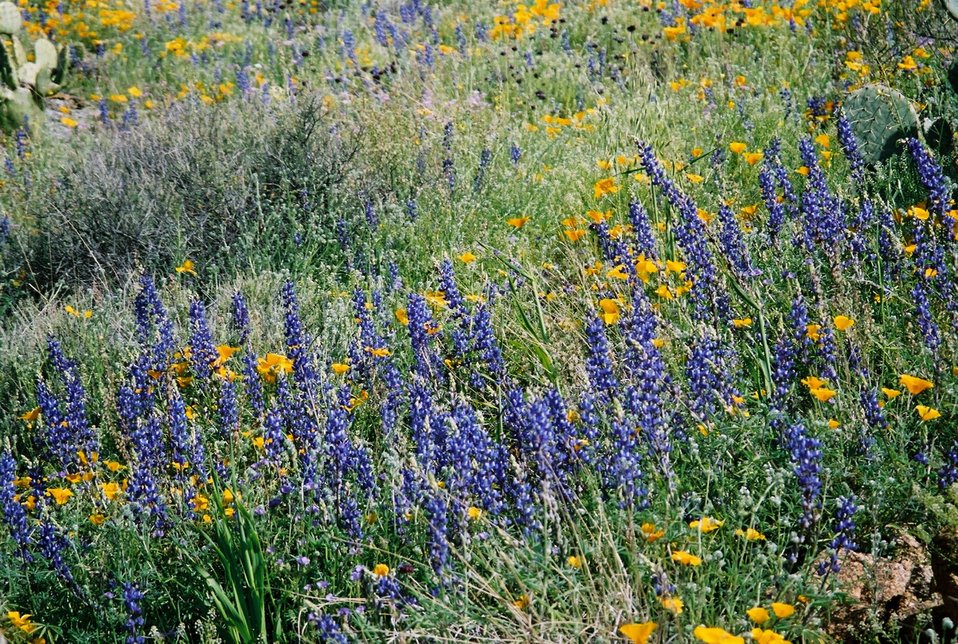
Many different kinds of beautiful wildflowers grow in the Agua Fria National Monument.